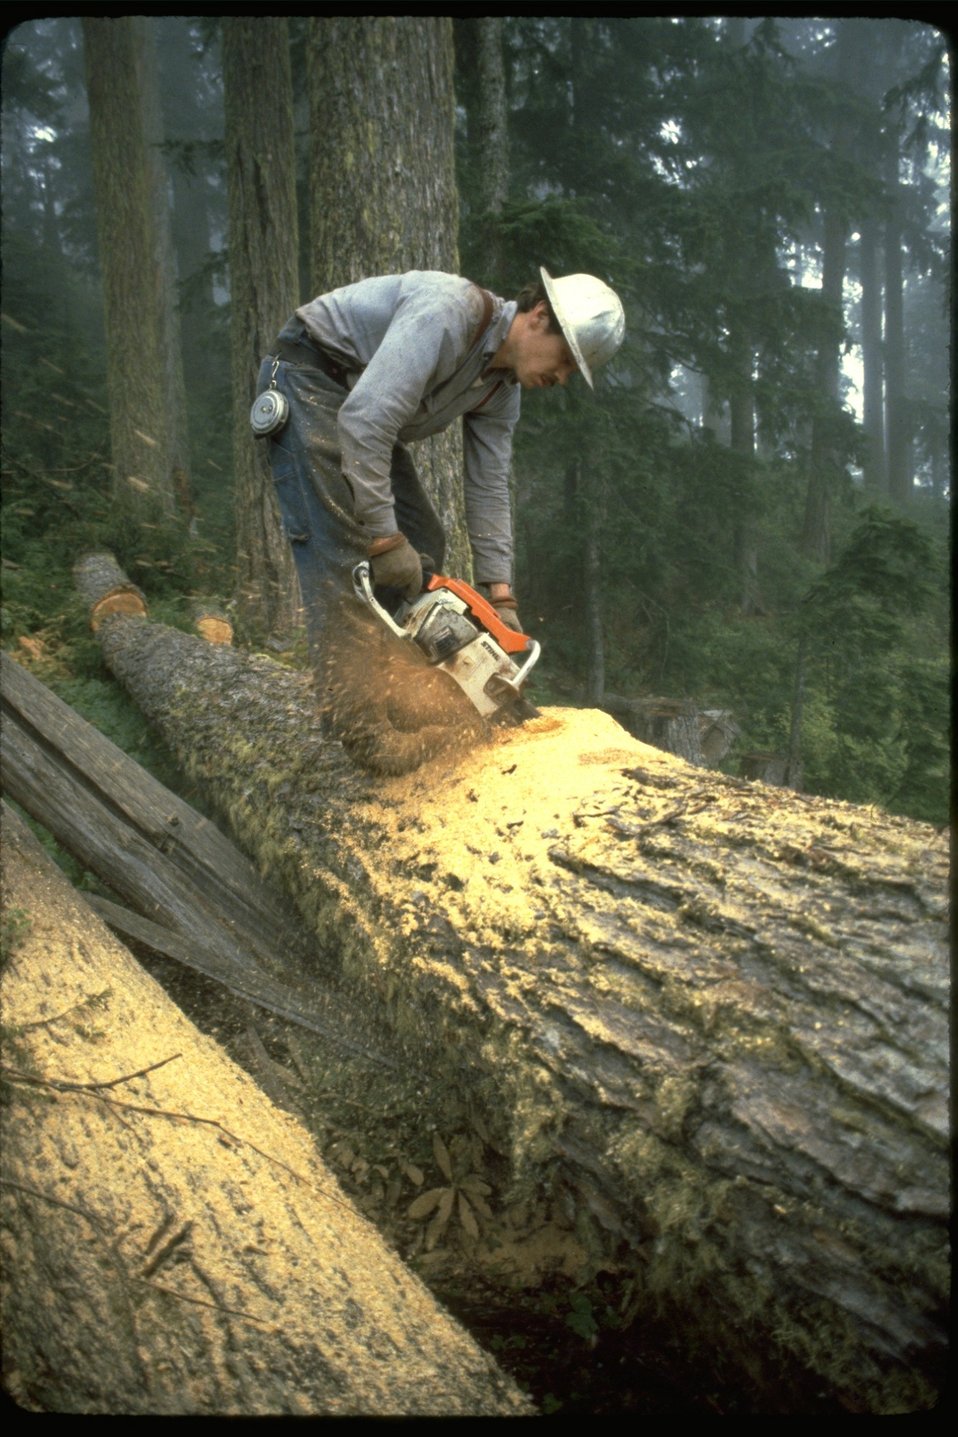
Logger bucking up a log.